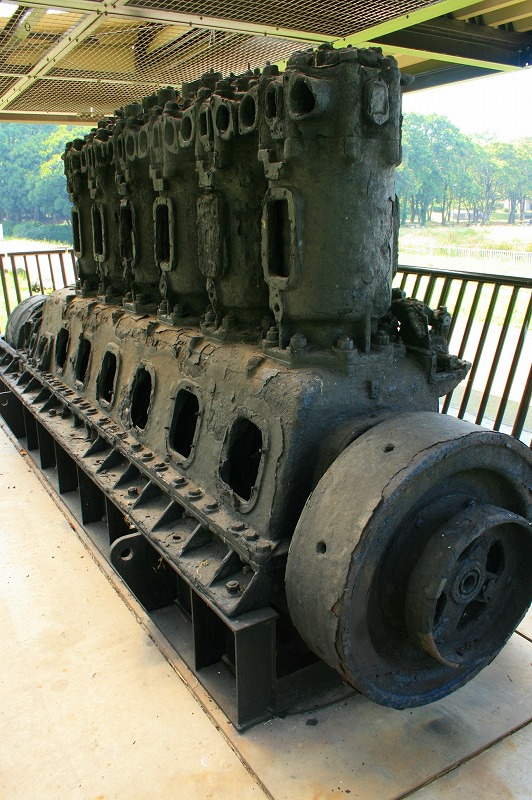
第五福竜丸エンジン